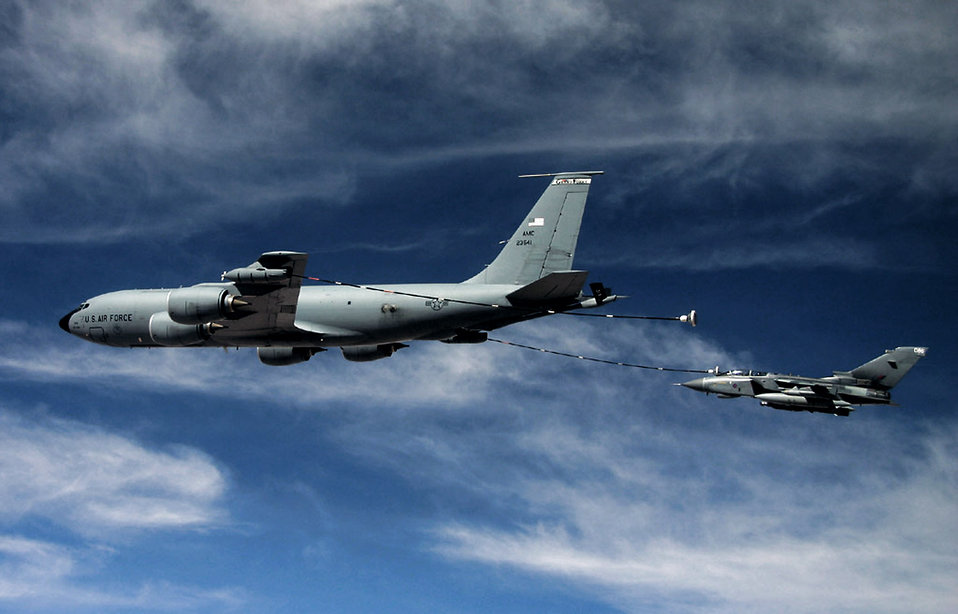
Airpower summary: KC-135 provides fuel support

A KC-135 Stratotanker refuels a Royal Air Force GR-4 Tornado over Iraq using the multi-point refueling systems. With MPRS, Air Force tankers have the versatility to refuel Air Force, Navy and coalition aircraft all in the same mission.